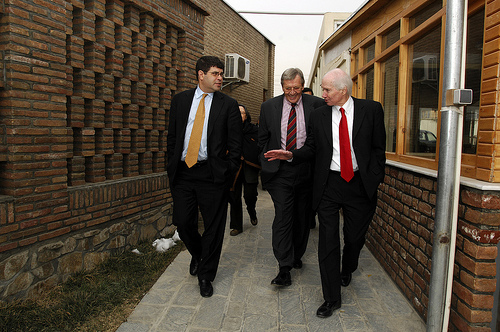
American University of Afghanistan

Deputy Secretary Wolin before his speech at the American University of Afghanistan.